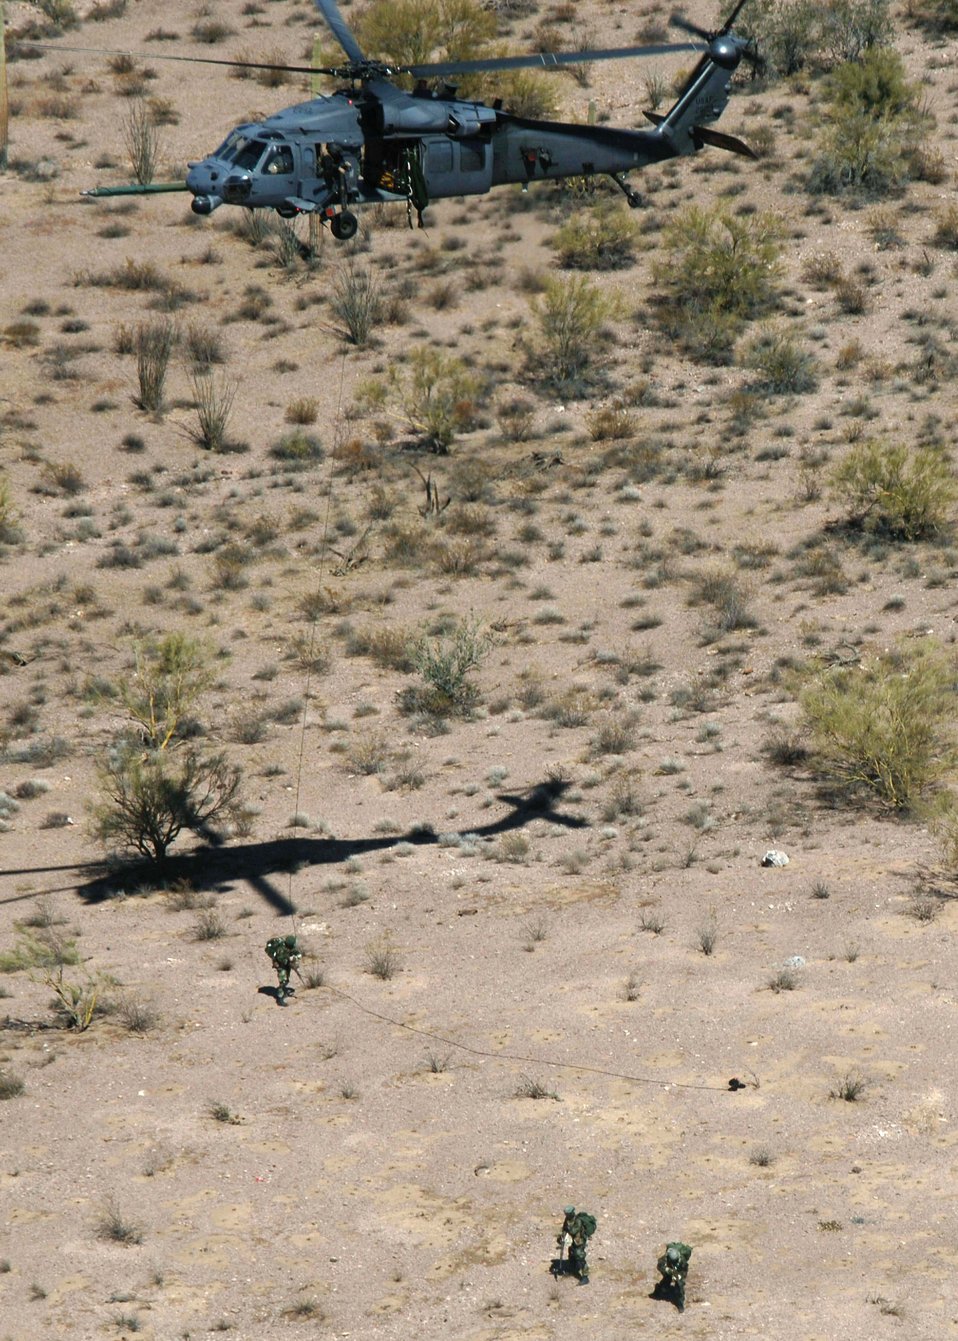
Insertion/extraction training

Pararescuemen from the 48th Rescue Squadron, repel down a HH-60 Pavehawk helicopter into a simulated hot zone, Monday, March 13, 2006. The 55th Rescue Squadron and pararescuemen assigned to the 48th Rescue Squadron were conducting alternate insertion/extraction training near Davis-Monthan Air Force Base, Ariz.